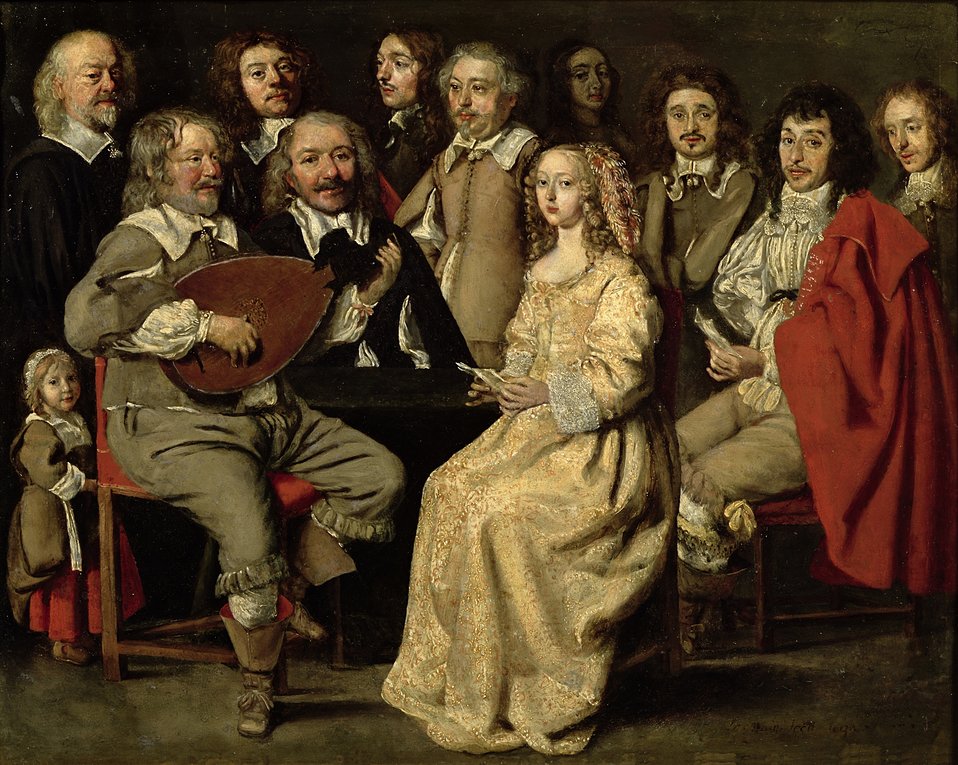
Antoine Le Nain - Réunion musicale